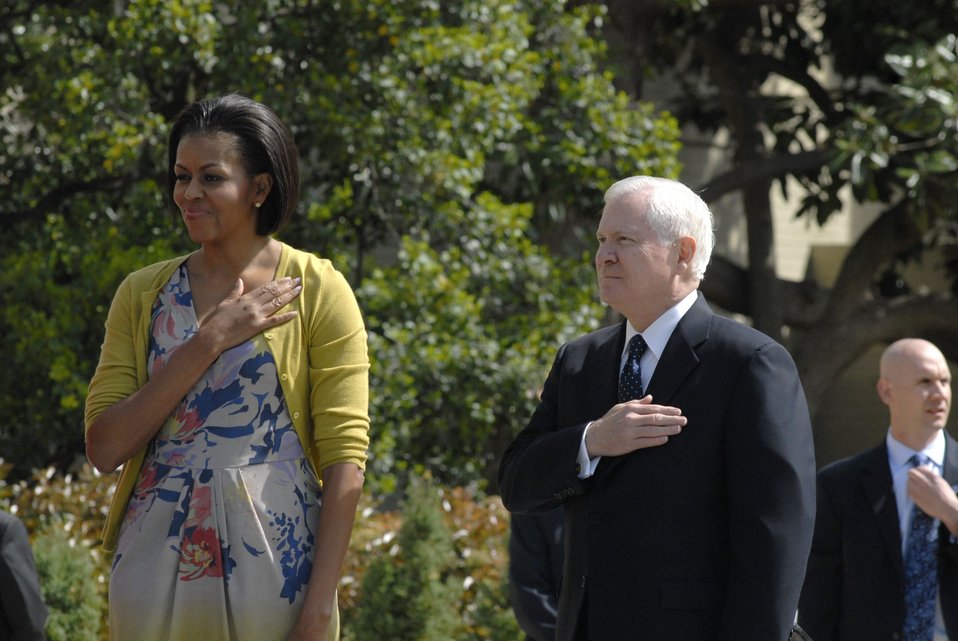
First lady visits Pentagon, salutes military families, wounded warriors

First lady Michelle Obama (left) joins host, Defense Secretary Robert Gates, as the National Anthem plays during a gathering April 9, 2010, in Washington, D.C. The first lady visited the Pentagon and thanked the military personnel and civilian employees serving at the Defense Department.